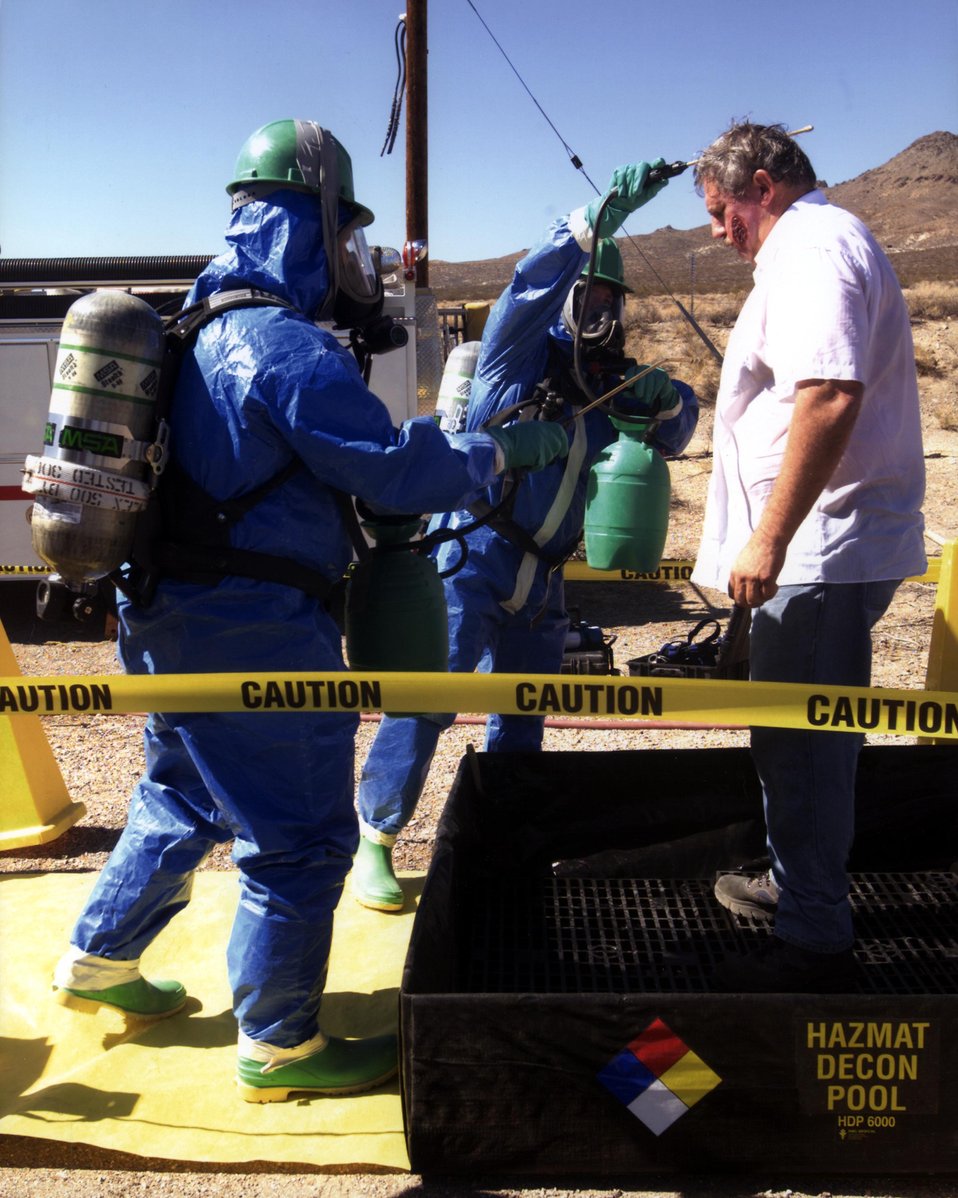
A HAZMAT DECONTAMINATION EXERCISE AT THE NEVADA TEST SITE.